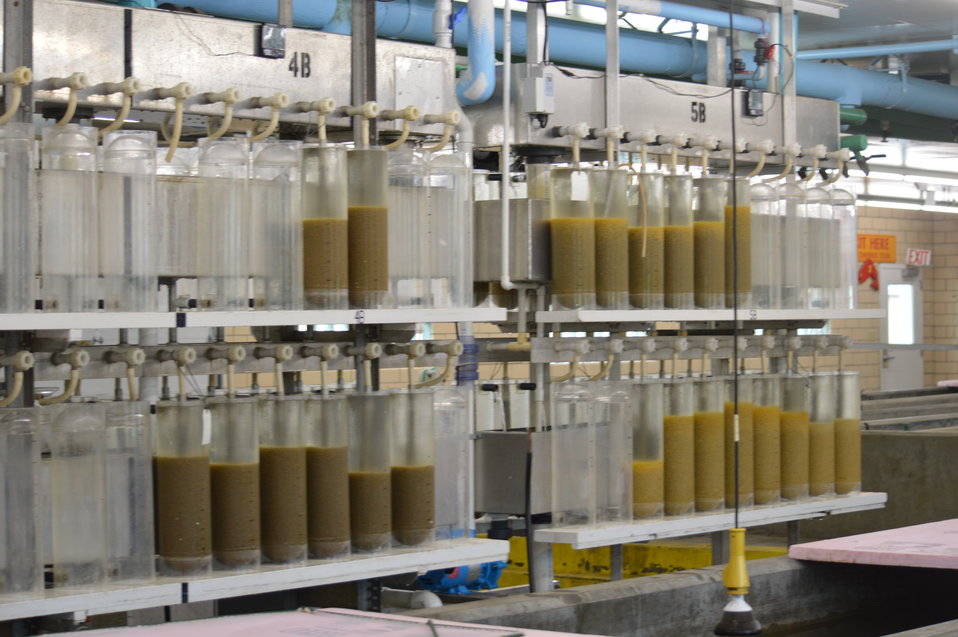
Eggs in upwelling jars

Garrison Dam National Fish Hatchery in North Dakota.